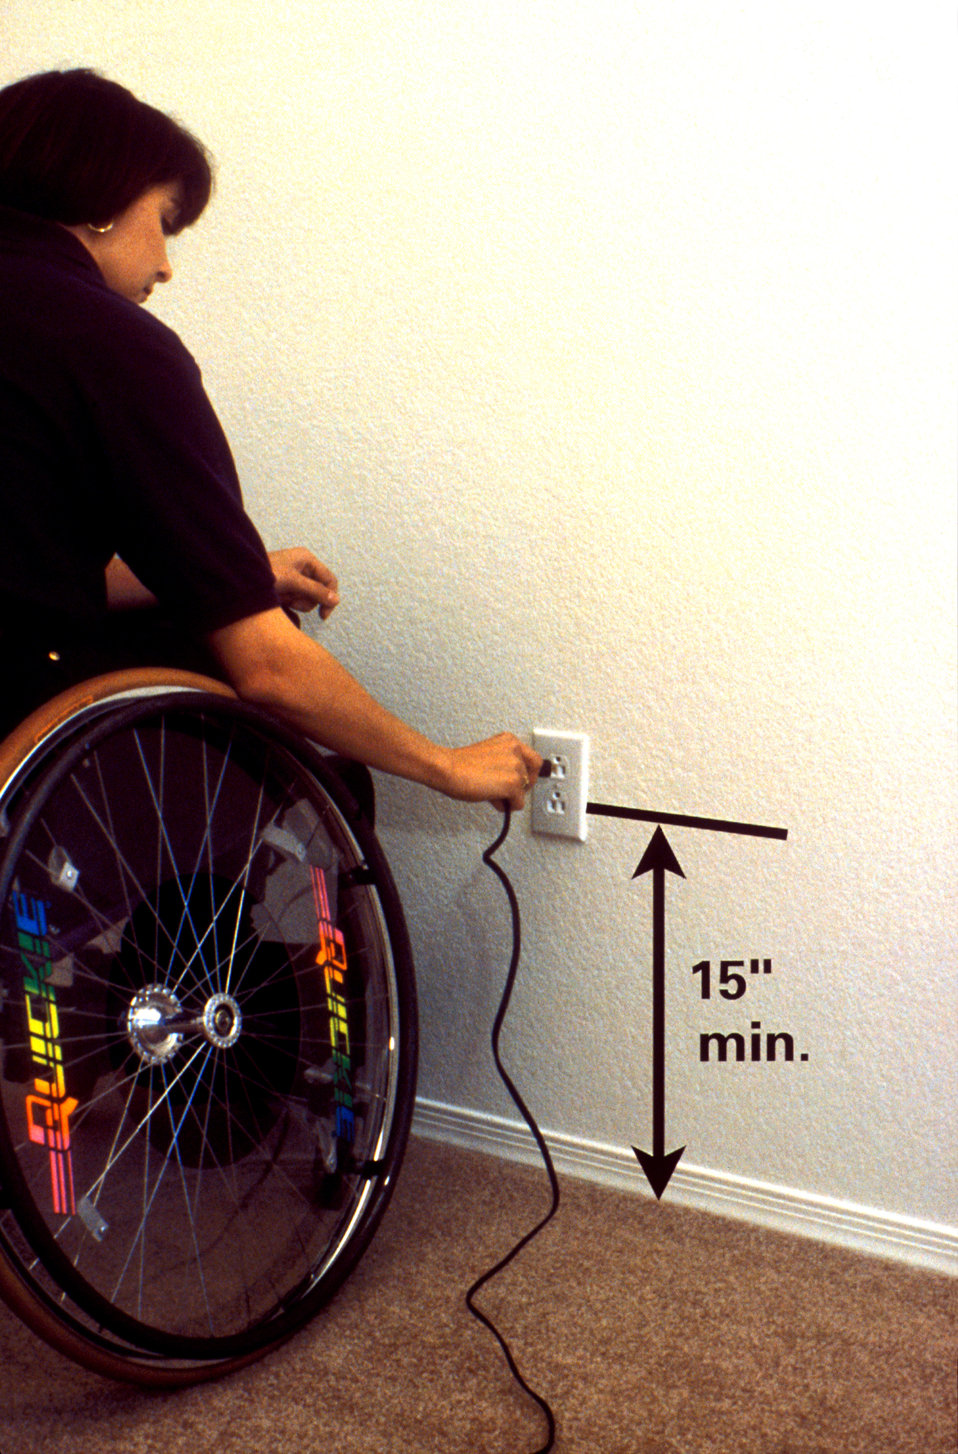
This 1997 image showed that by mounting an electrical outlet no lower than fifteen inches above floor level, a wheelchair-seated individual could easily insert, or extract an electrical plug without having to maintain an uncomfortable body position. Also, installing the outlet lower than the suggested 15in. would prove difficult to access for those with mobility impairments that hinder them from accomplishing the bending motion. The woman seated in the wheelchair depicted here, easily accessed the electrical outlet without difficulty.